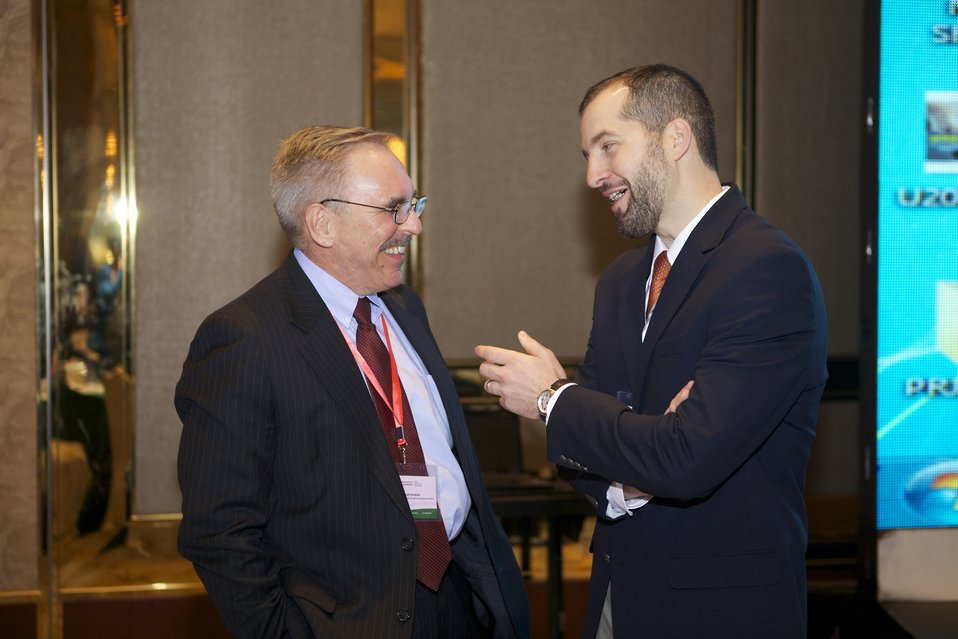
U.S. Department of Agriculture (USDA) Foreign Agricultural Service (FAS) China Minister Counselor for Agricultural Affairs Scott Sindelar speaks wih Iowa State Agriculture Deputy Secretary Michael Naig at the trade mission conference in China on May 5, 2014. USDA Farm and Foreign Agricultural Services (FFAS) Under Secretary Michael Scuse lead a trade mission, which is part of President Obama’s Made in Rural America export and investment initiative, designed to help rural businesses and leaders take advantage of new investment opportunities and access new customers and markets abroad.